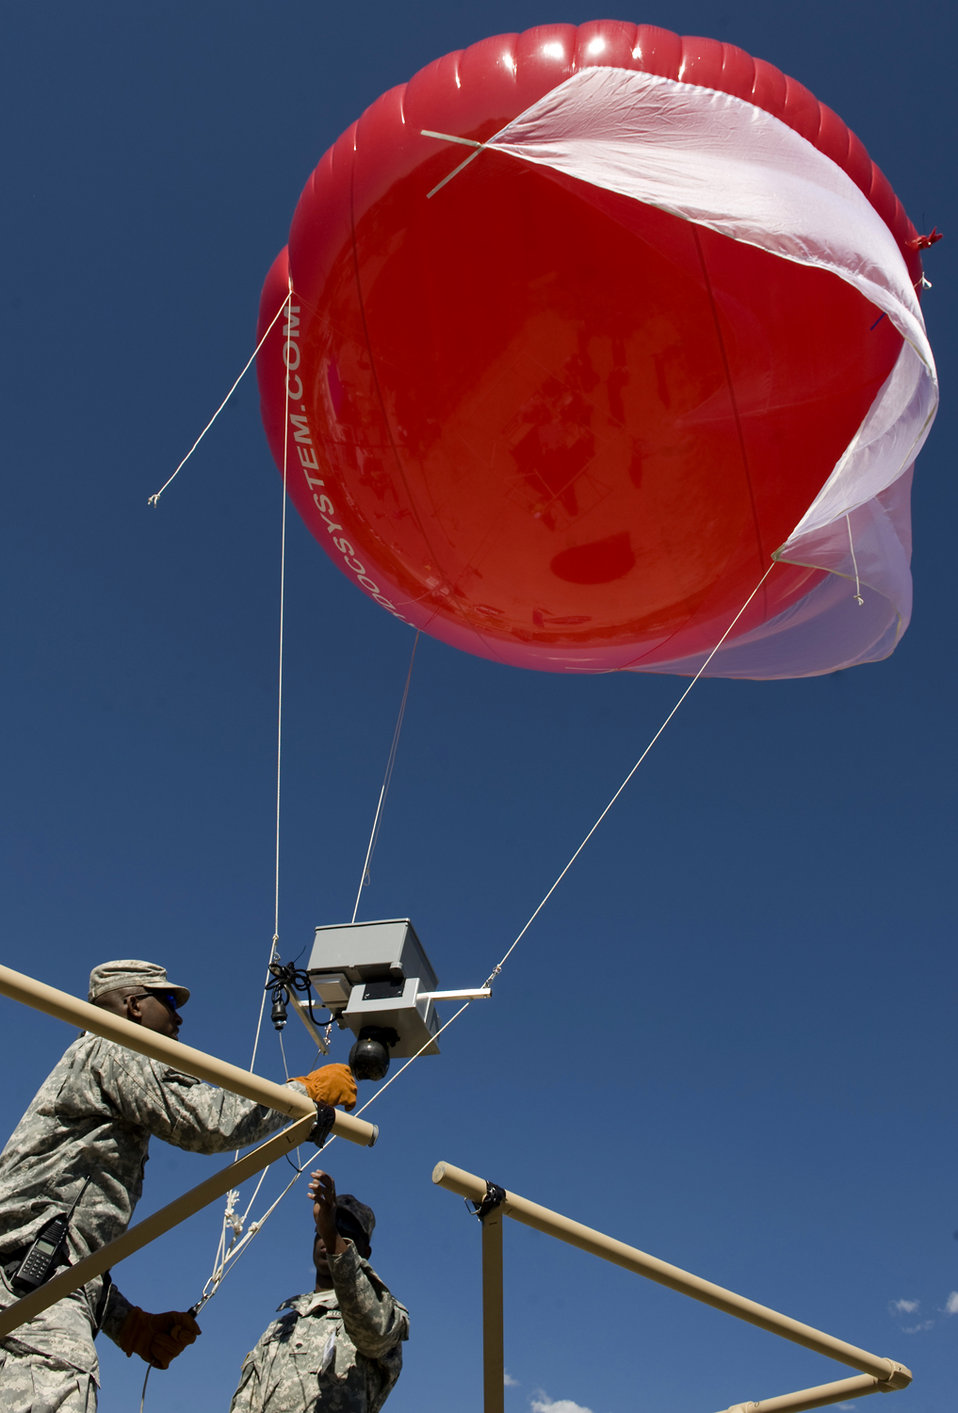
Coalition Warrior Interoperability Demonstration

Soldiers participating in the Coalition Warrior Interoperability Demonstration June 16, 2010, in Colorado Springs, Colo., prepare a balloon carrying communications and video equipment. The balloon is being used to test new communications capabilities between Department of Defense organizations and local emergency services in situations where normal communications have been disabled.